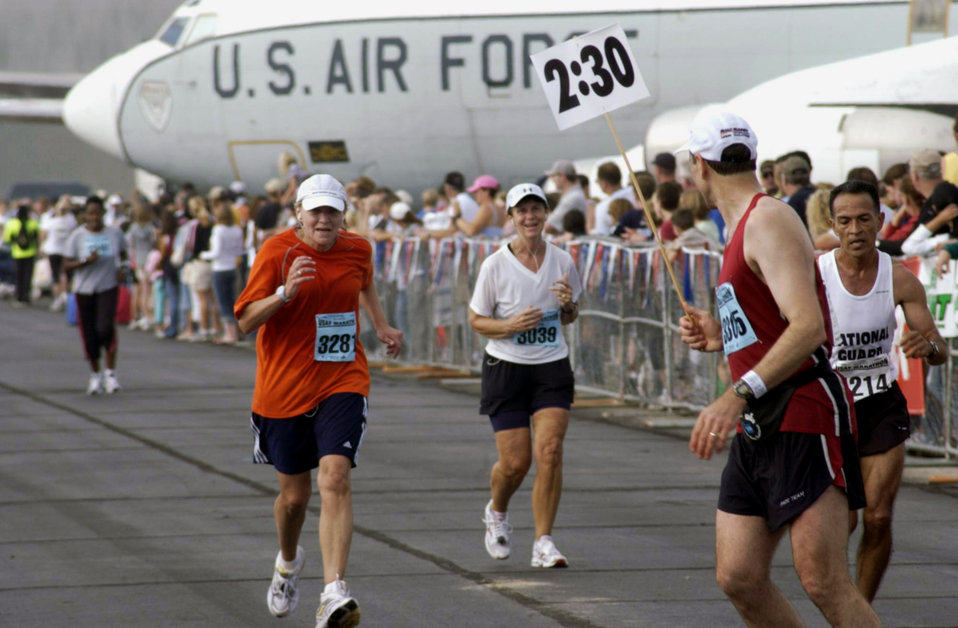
Pace team encourages marathoners

Participants in the 2006 Air Force Marathon come down the home stretch as Jim Crist (right), the lead pacer, looks on at Wright-Patterson Air Force Base, Ohio.